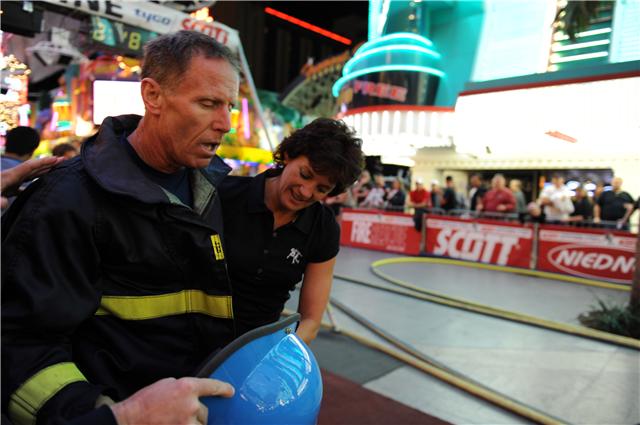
Catching his breath

Dave Chiodo grabs his breath after completing the individual relay event Nov. 19, 2009, at the Scott Firefighter Combat Challenge in Las Vegas. Mr. Chiodo is a firefighter at Travis Air Force Base, Calif.